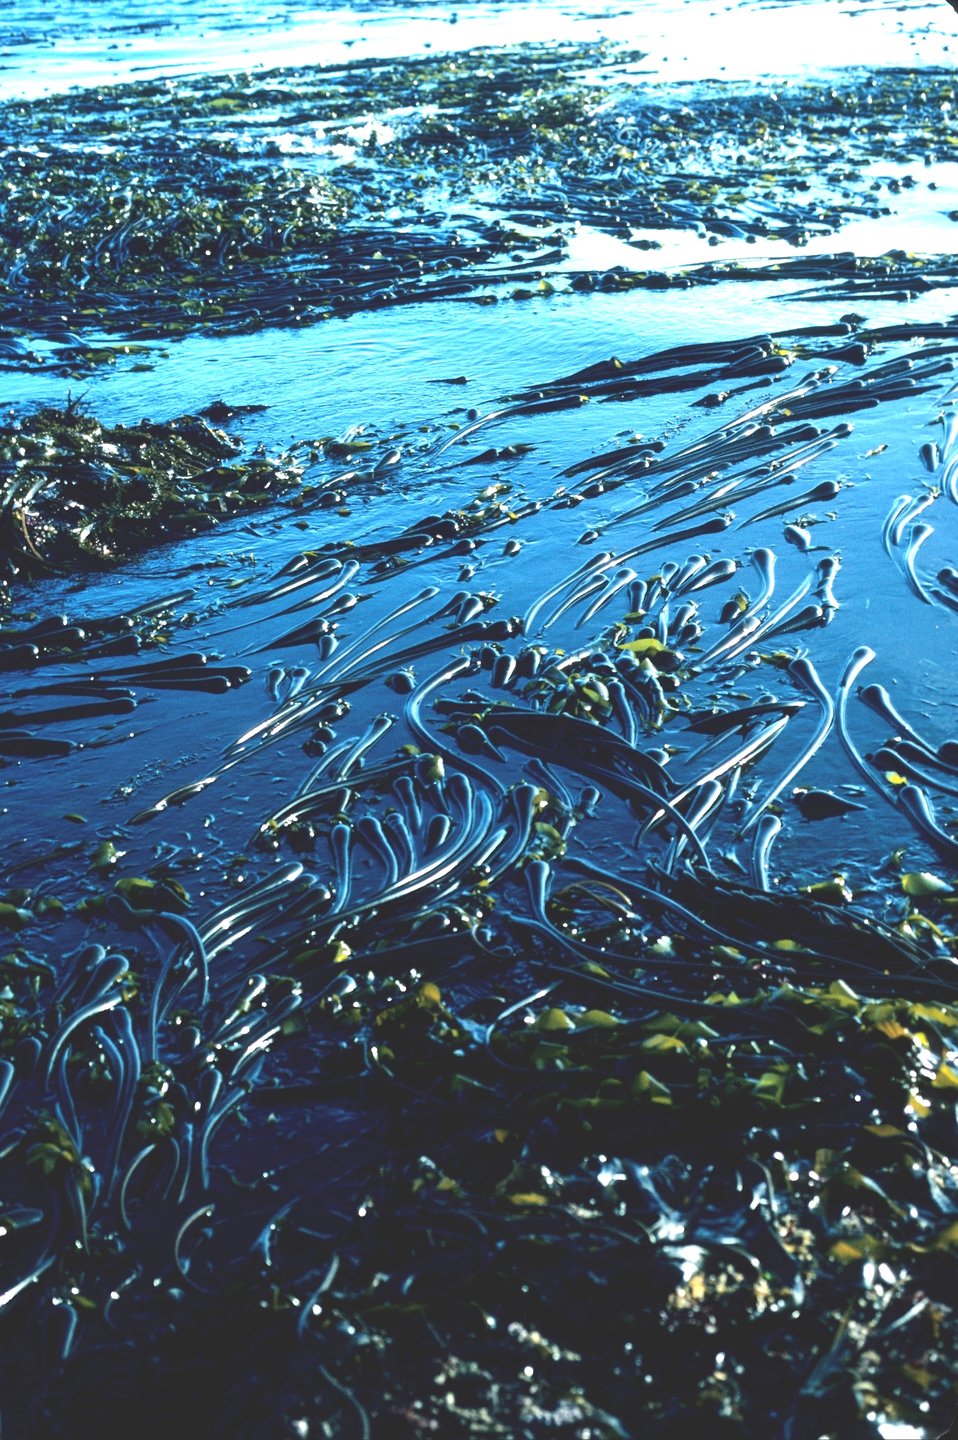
Kelp (Nereocystis luetkeana) at low tide